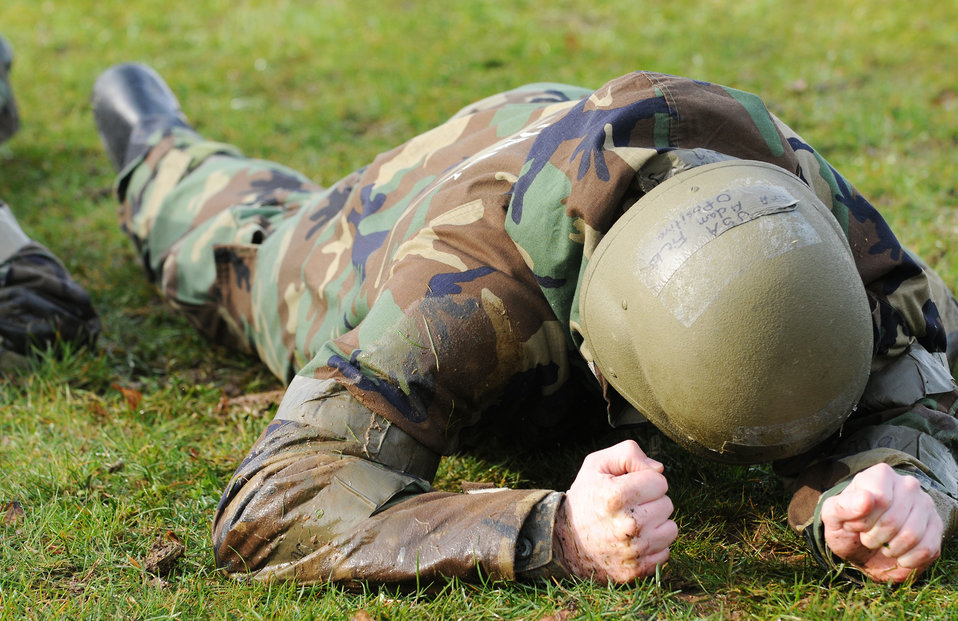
Spangdahlem Airmen train for evaluation

Senior Airman Adam Fields crawls through a wet field during individual core competency skills training April 2, 2010 at Spangdahlem Air Base, Germany. Airman Fields is with the 52nd Component Maintenance Squadron,